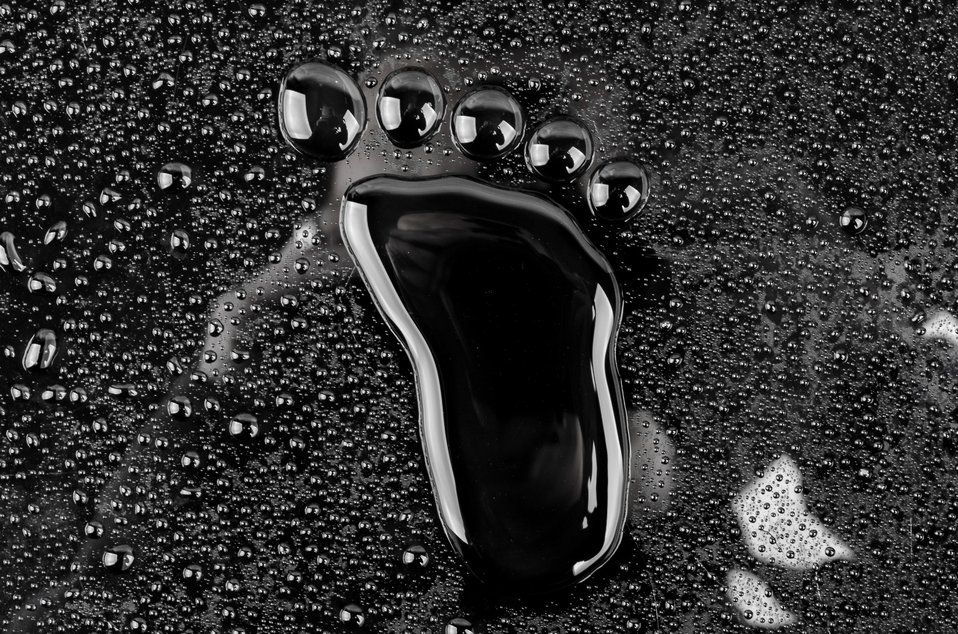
Footprint

The footprint made up of water on a black background.